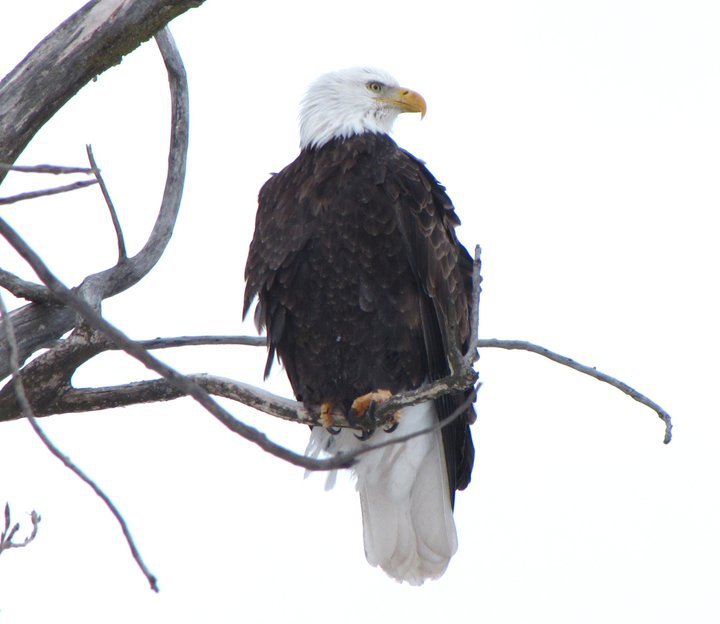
bald eagle

Port Louisa National Wildlife Refuge, IA